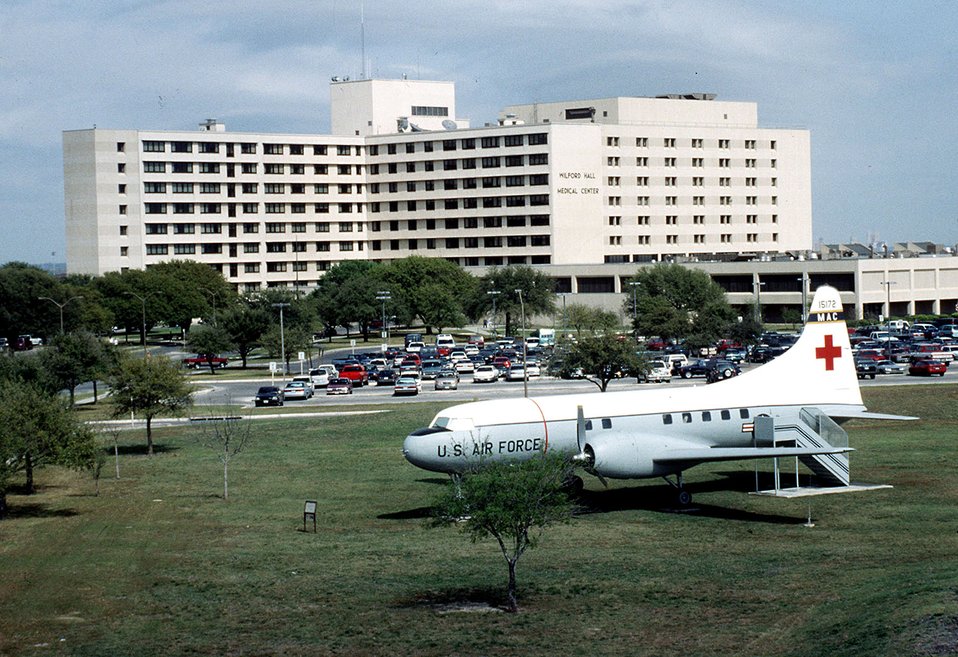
50 years of medical excellence

Wilford Hall Medical Center officials commemorated 50 years as the Air Force's medical flagship Nov. 16 in a ceremony at Lackland Air Force Base, Texas. The nine-story, 150-bed hospital began as a small station hospital and was later downgraded to an infirmary.